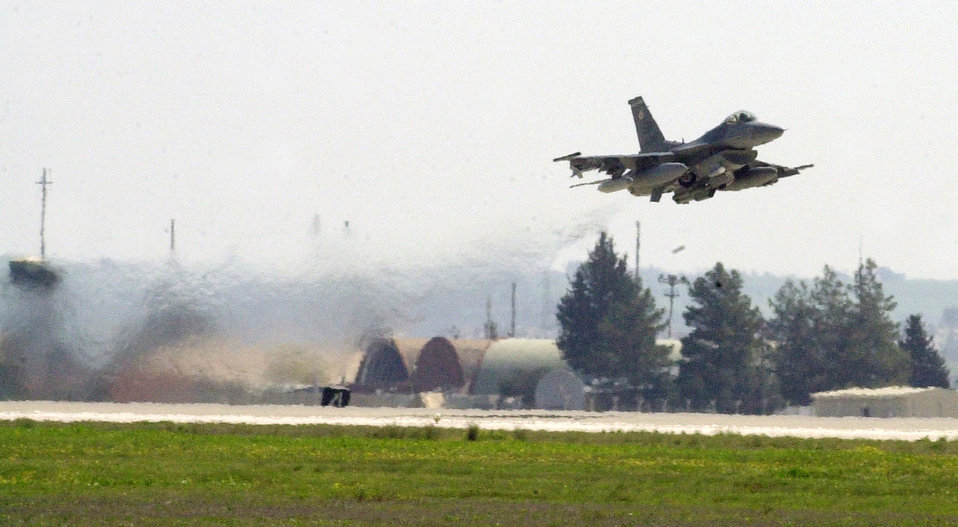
End of an era

INCIRLIK AIR BASE, Turkey -- The last two F-16CJs deployed from Shaw Air Force Base, S.C. prepare for their final launch April 12. Shaw personnel and aircraft are returning home after supporting Operation Northern Watch for the last several years. Operation Northern Watch flew its last operational mission March 17 after 12 successful years of enforcing the no-fly-zone over northern Iraq.